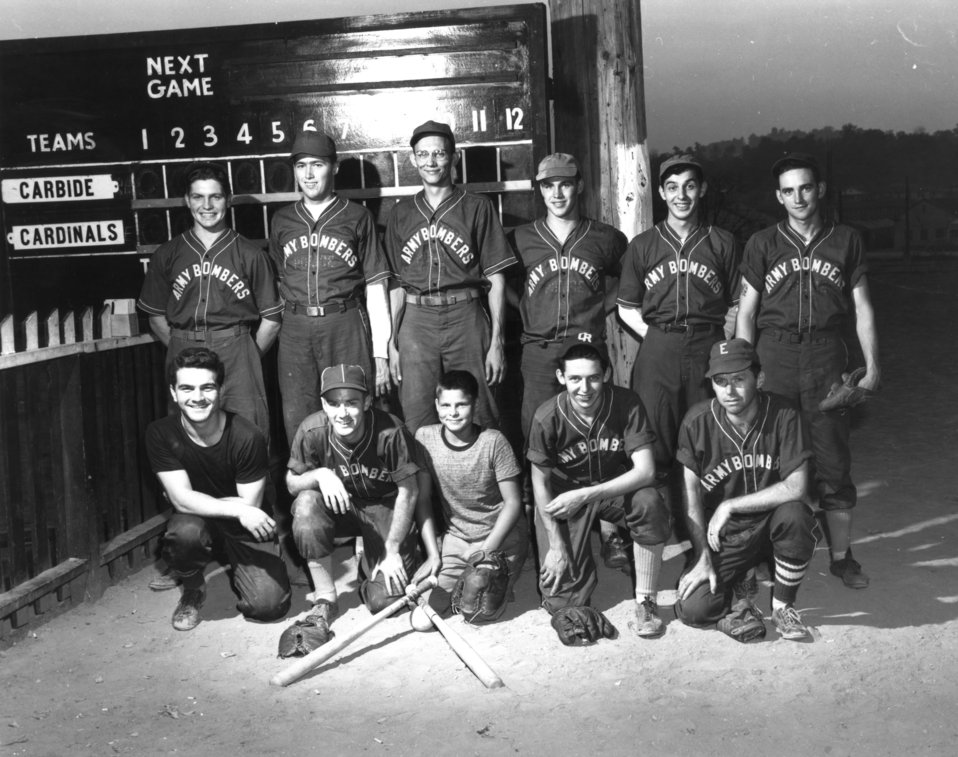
Recreation at Oak Ridge